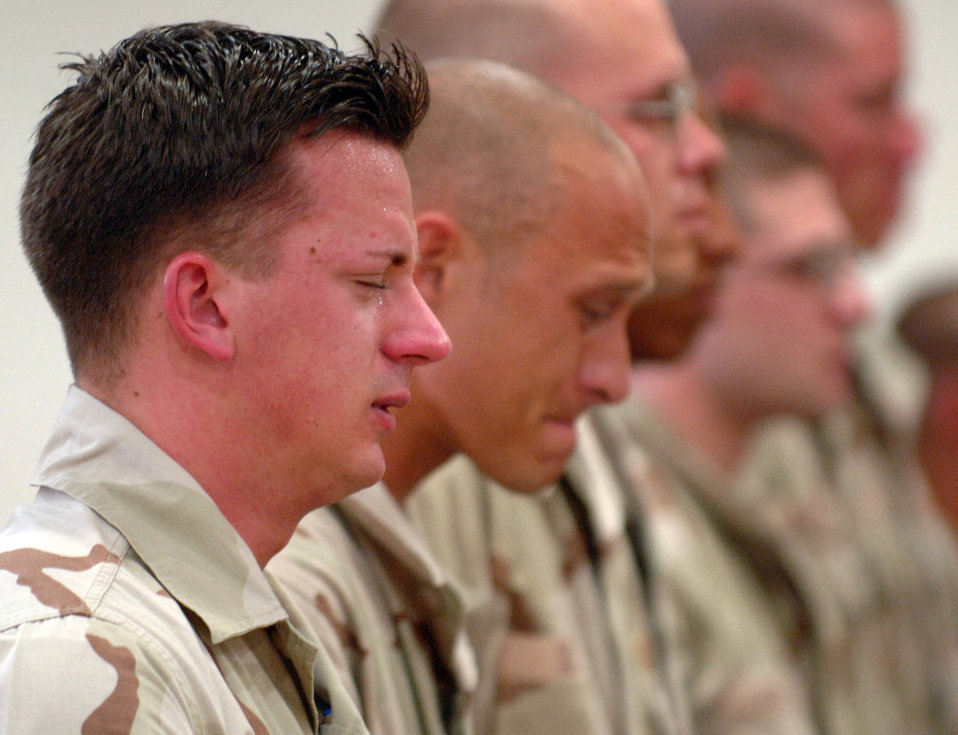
Final salute

SOUTHWEST ASIA -- Airmen with the 379th Expeditionary Security Forces Squadron mourn the loss of two fellow security forces Airmen, Tech. Sgt. Jason L. Norton and Staff Sgt. Brian McElroy, killed in action Jan. 22 in Southwest Asia.